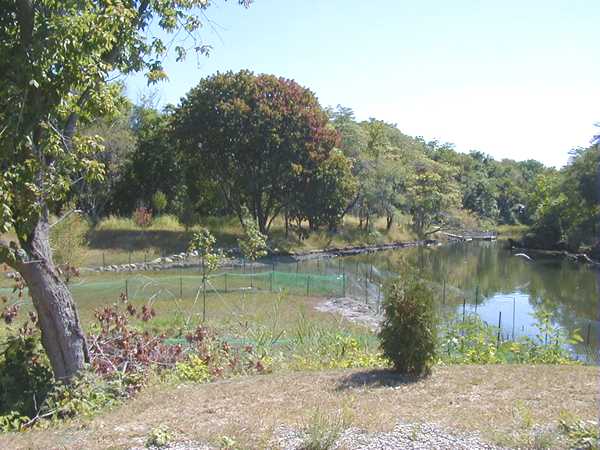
Spring 2001, Successful native replanting along the Acushnet River shoreline

A PCB contamination removal project had been underway months earlier over the winter, and the following spring showed positive signs of the restoration taking root.